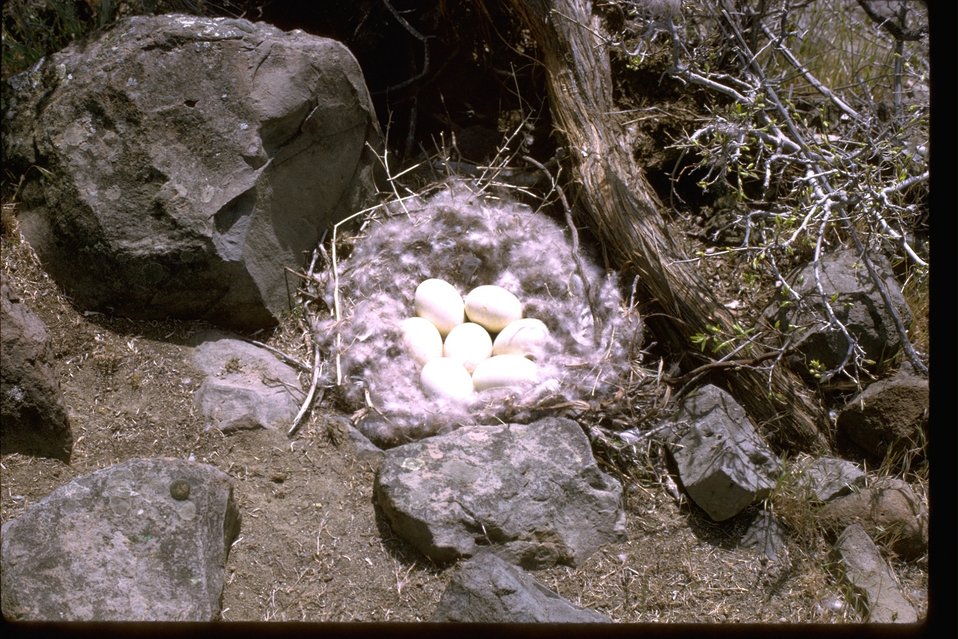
Close-up of a goose's nest in the Deschutes River area.